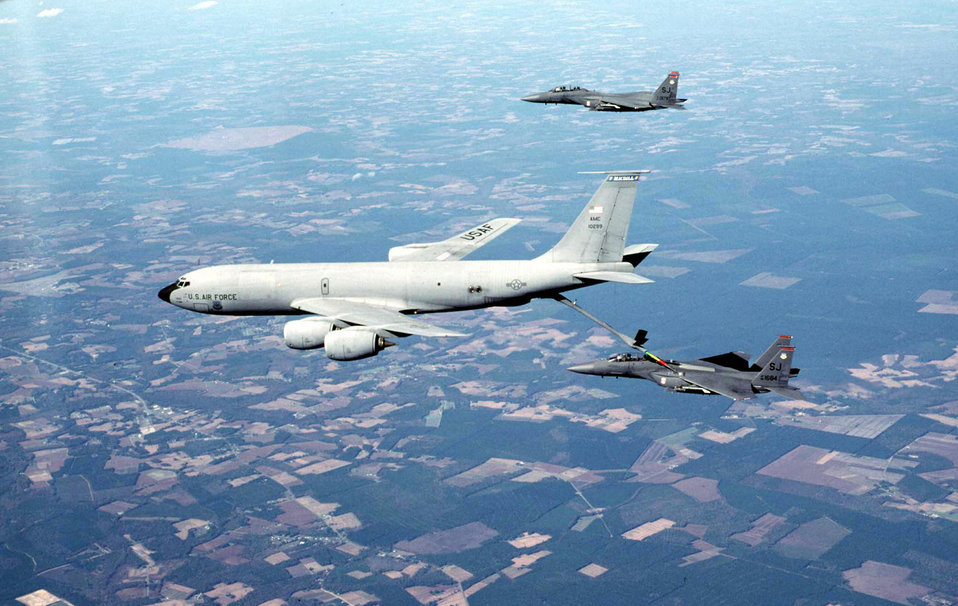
Gas line

FILE PHOTO -- An F-15E from Seymour Johnson Air Force Base, N.C., receives fule from a KC-135R from Macdill AFB, Fla. The KC-135's principal mission is air refueling. This asset greatly enhances the U. S. Air Force's capability to accomplish its mission of Global Engagement. It also provides aerial refueling support to U.S. Navy, U.S. Marine Corps and allied aircraft.